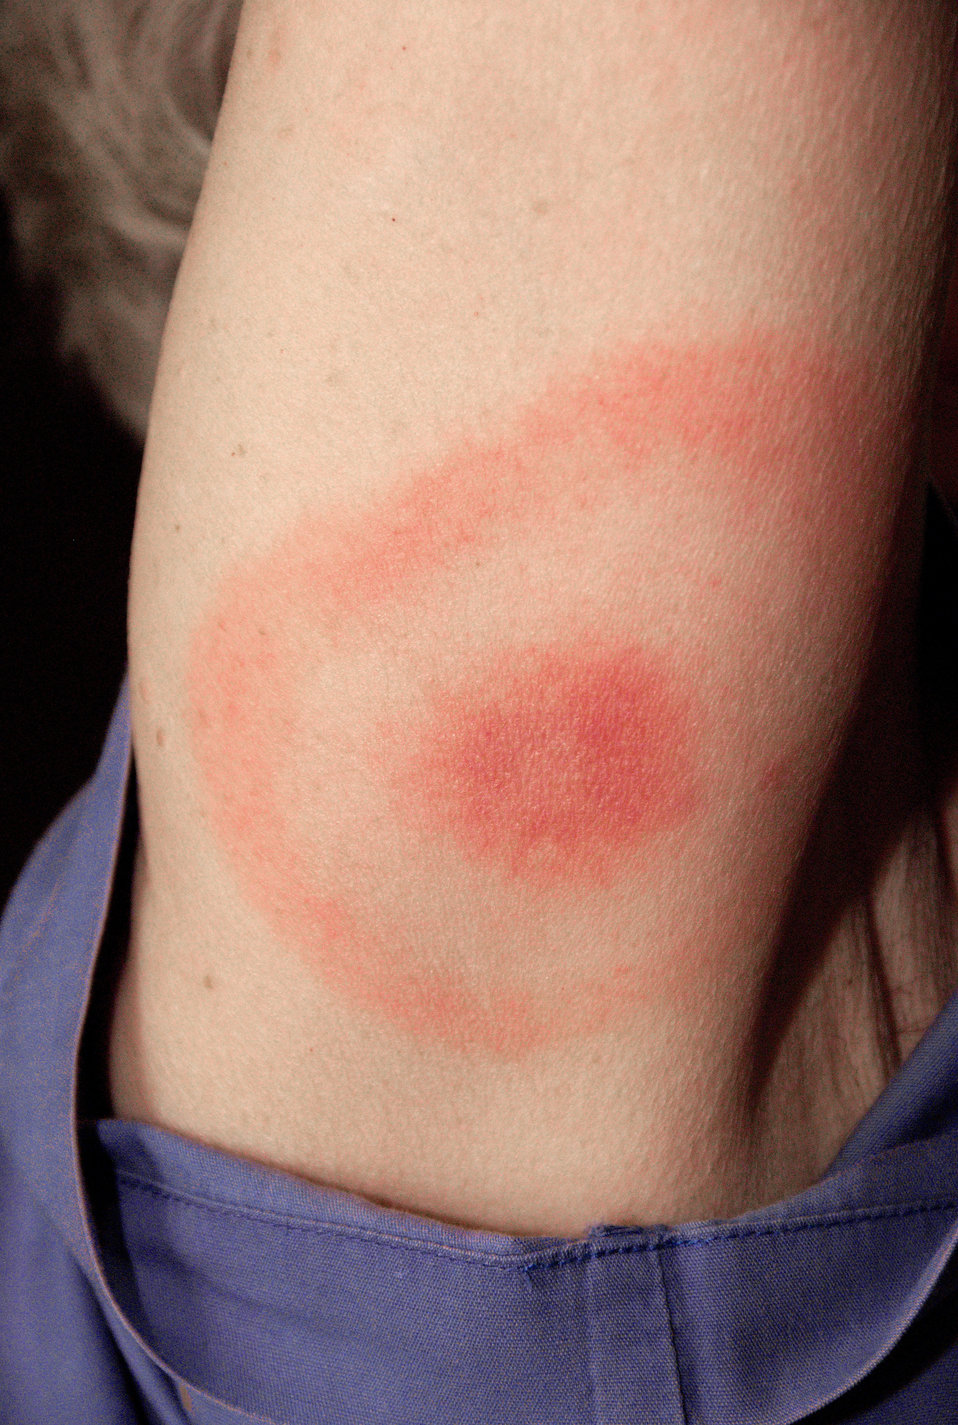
This 2007 photograph depicts the pathognomonic erythematous rash in the pattern of a 'bull's-eye', which manifested at the site of a tick bite on this Maryland woman's posterior right upper arm, who'd subsequently contracted Lyme disease.Lyme disease patients who are diagnosed early, and receive proper antibiotic treatment, usually recover rapidly and completely. A key component of early diagnosis is recognition of the characteristic Lyme disease rash called erythema migrans. This rash often manifests itself in a 'bull's-eye' appearance, and is observed in about 80% of Lyme disease patients.